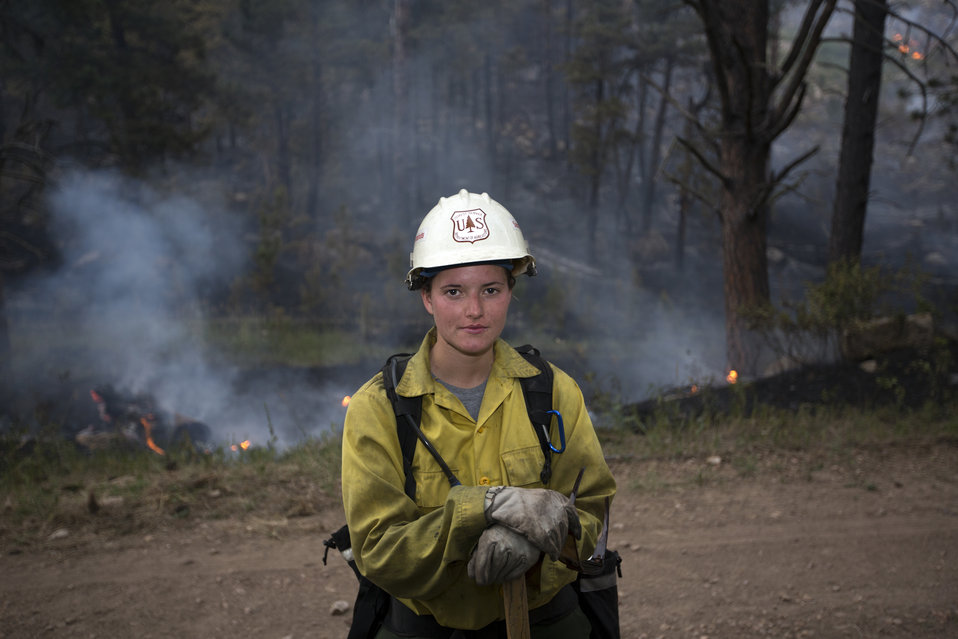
Sacramento Interagency Hotshot firefighter Kim Seitzinger from the Lincoln National Forest in New Mexico fights the Myrtle Fire in Custer, SD on July 22, 2012. The Sacramento Interagency Hotshot Crew (IHC) are a group of multi-skilled professional wild land firefighters specifically trained, organized, and equipped for rapid response to wildfire situations. The Sacramento IHC specialty is wildfire suppression, but is sometimes assigned other jobs, including search and rescue and disaster response assistance. When not busy fighting fires the Sacramento IHC work to meet resource goals on their home forest lands through thinning, prescribed fire implementation, habitat improvement or trail construction projects.